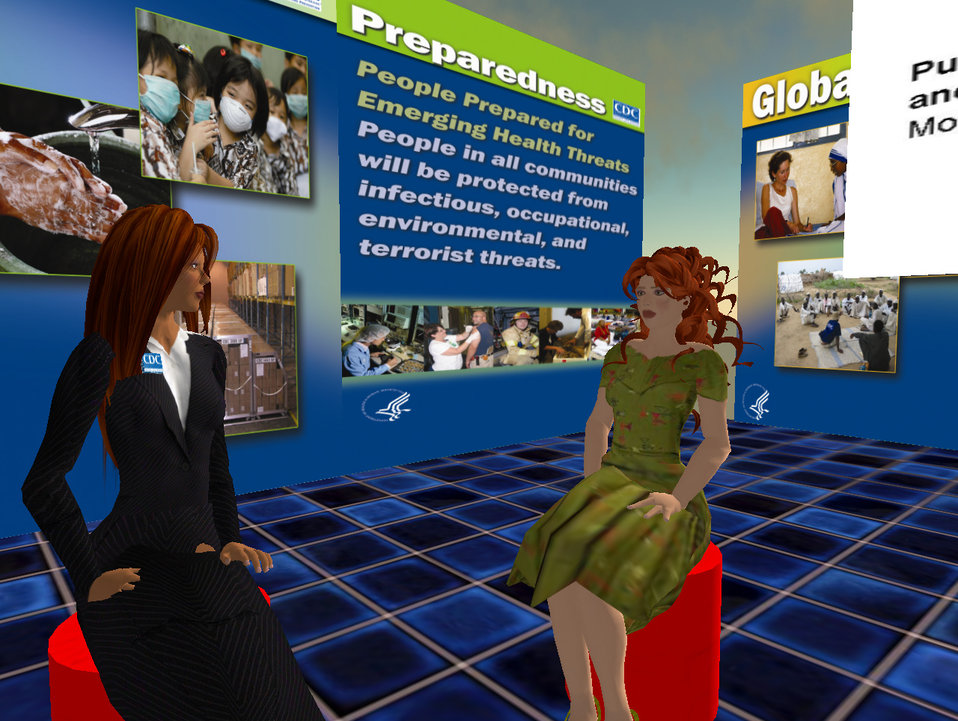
As a result of the successful 2006 Fall Health Fair, Dr. John Anderton, "through" CDC avatar Hygeia Philo, was interviewed by the social marketing expert Nedra Kline Weinreich, as part of her blog series 'Spare Change'. This image depicted the interview, between the two avatars which took place within the virtual Second Life environment. This was the forth design stage of the avatar, Ms. Philo. Customizing an avatar's appearance is a key aspect to community acceptance, and it was in preparation for the first CDC Health Fair, which took place inside Second Life in October, 2006, that Hygeia was again outfitted with a more corporate design for clothing, more realistic facial features and hair. See PHIL 10002, 10005, 10007, 10008, 10009, 10011, 10013, 10014, 10015, and 10016 for additional images of Ms. Philo.